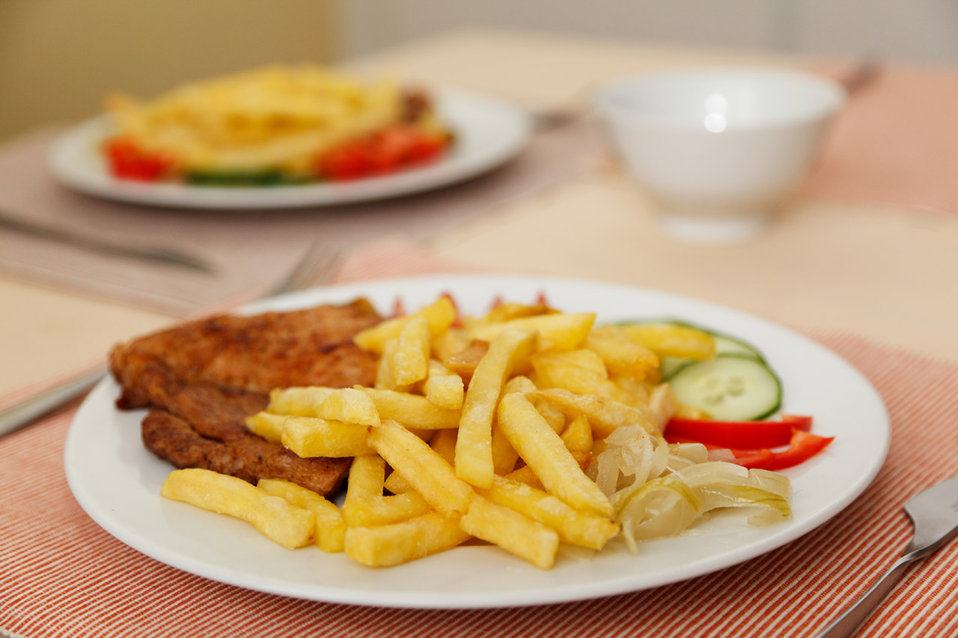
French fries and steak with vegetable on the plate with tatar sauce and second plate in the background.